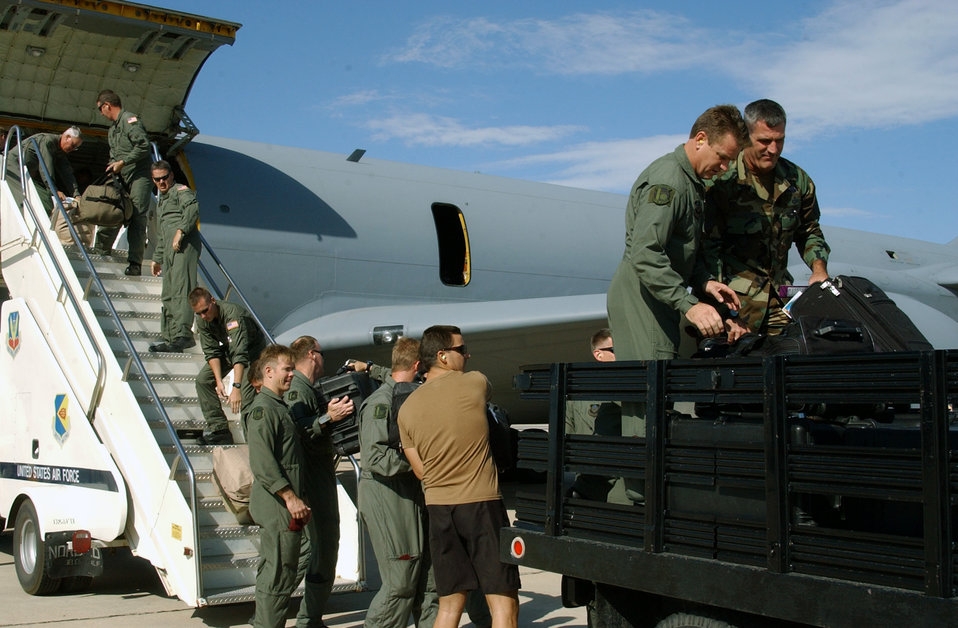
To the rescue

DAVIS-MONTHAN AIR FORCE BASE, Ariz. -- As Hurricane Frances approaches the Florida coast, reservists from the 305th Rescue Squadron here load equipment and medical supplies onto a KC-135 Stratotanker. They are flying to Georgia to provide hurricane relief and rescue missions in the wake of the hurricane.